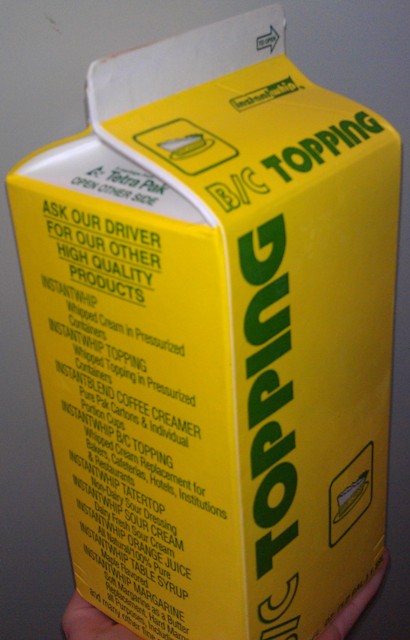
RECALLED - Whipped Topping

December 16, 2011 - Product Recall - Ohio Processors, Inc. Issues Allergy Alert on Undeclared Milk Allergens in “Instantwhip B/C Topping” (Whipped Topping).